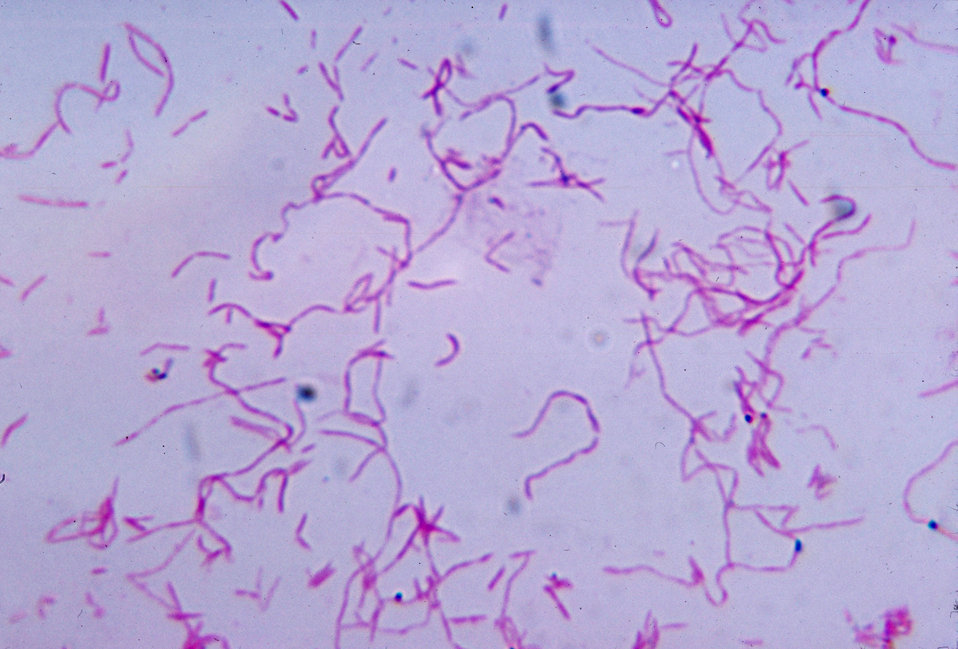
This photomicrograph shows Fusobacterium nucleatum after being cultured in a thioglycollate medium for 48 hours.